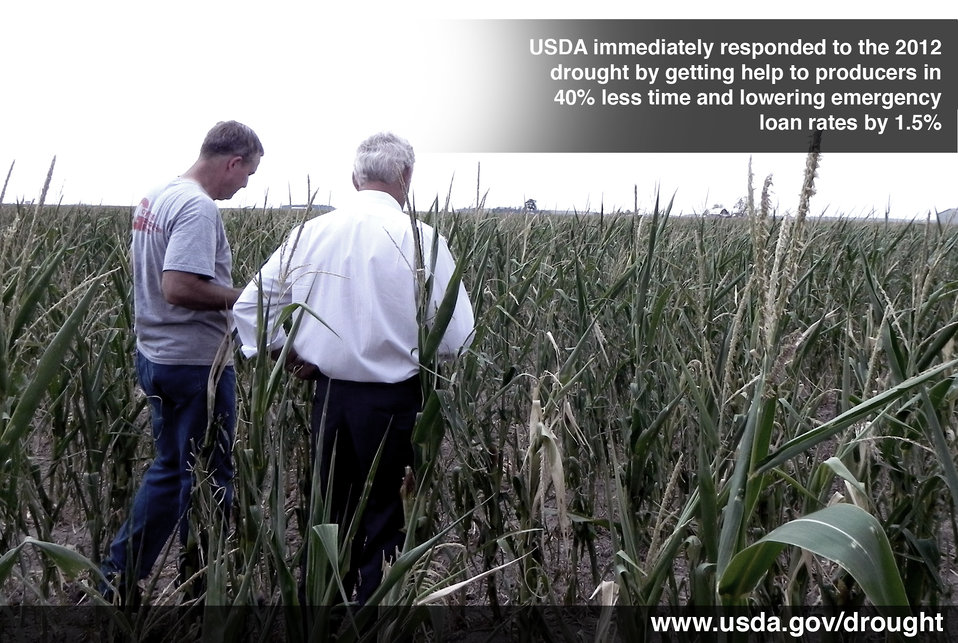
Agriculture Under Secretary for Farm and Foreign Agricultural Service (FFAS) Michael Scuse (right) tours the drought stricken cornfield of farmer Doug Goyings at the Goyings farm in Paulding, County, OH on Tuesday, July 17, 2012. Agriculture Secretary Vilsack has instructed Agriculture subcabinet leaders to travel to affected drought areas to augment ongoing assistance from state-level U.S. Department of Agriculture (USDA) staff and provide guidance on USDA’s new, streamlined disaster process. The U.S. Drought Monitor currently reports that 61 percent of the continental United States is in a moderate to exceptional drought.